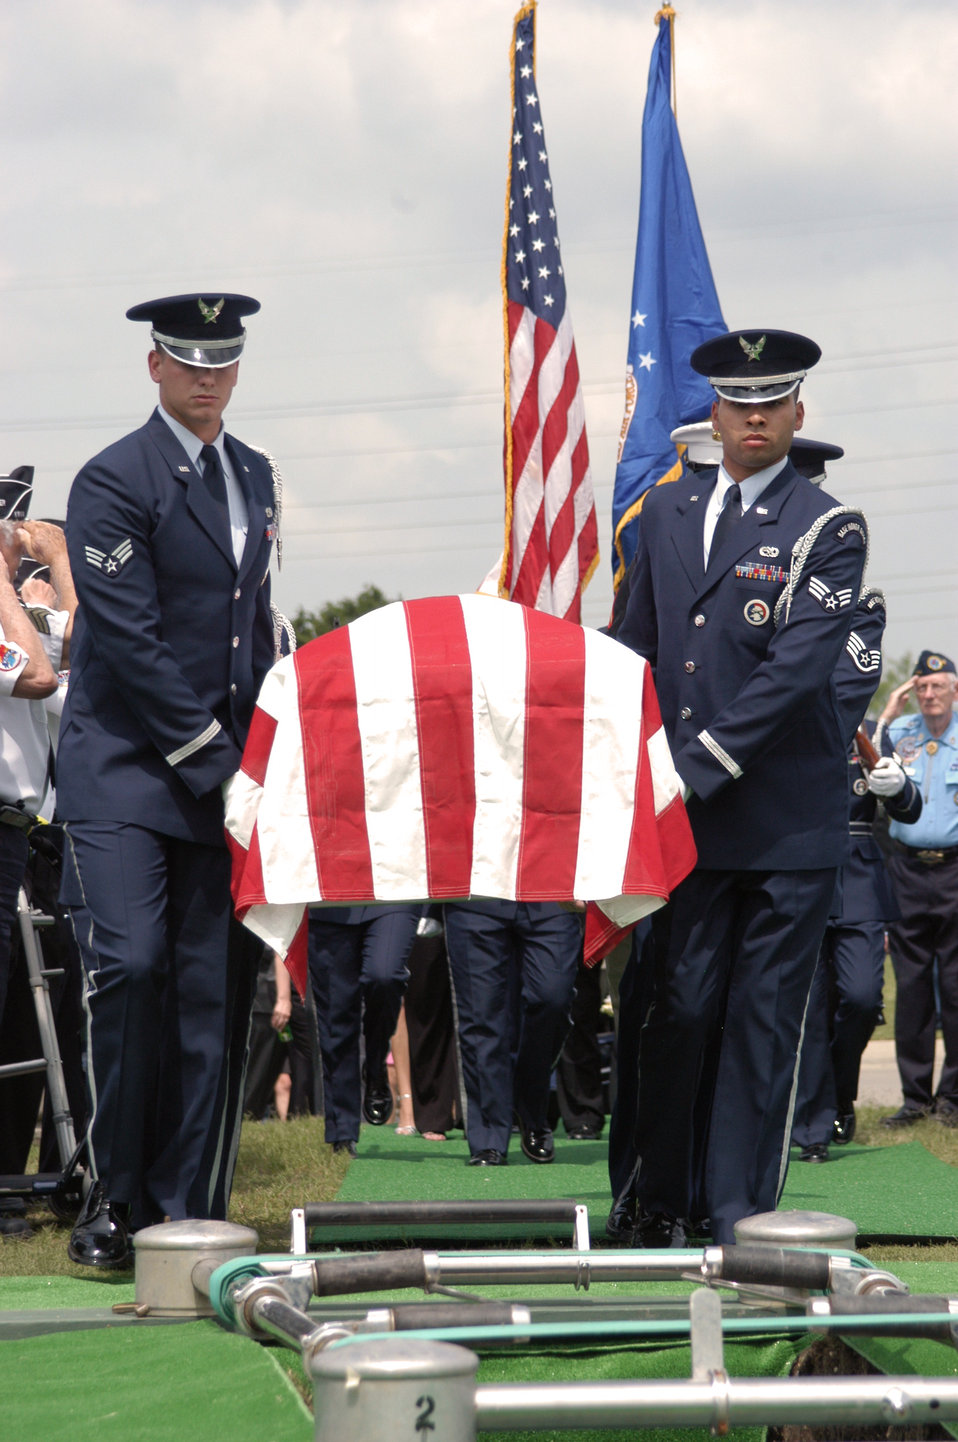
Going home

DALLAS -- Honor guard Airmen carry the remains of Capt. Troy Cope to his final resting site during a repatriation ceremony at the Dallas-Fort Worth National Cemetery here May 31. Captain Cope's remains were recovered in China after his F-86 Sabre was shot down in 1952 during the Korean War.